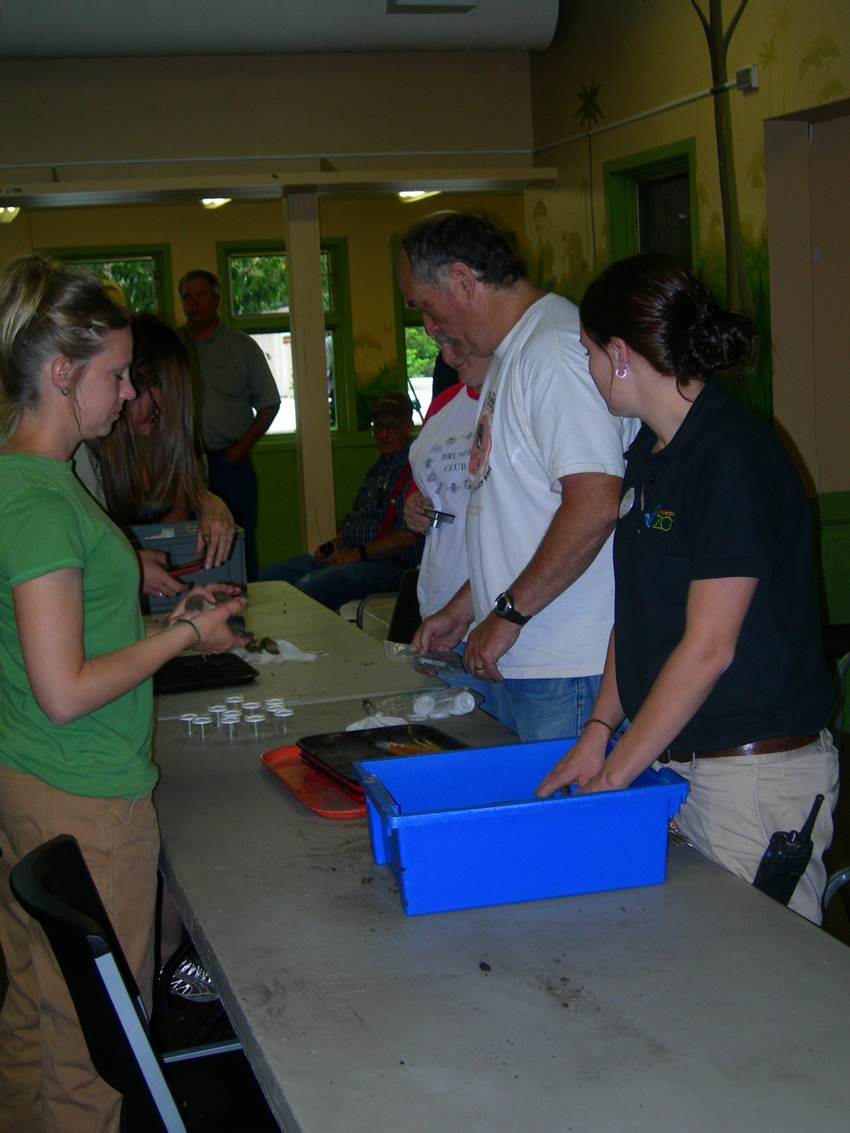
Larvae and Tubes

Ang Wright of the U.S. Fish and Wildlife Service, Steve Spomer of the University of Nebraska, and Stephy Hanigan of the Lincoln Children’s Zoo discuss removal of larvae from the rearing tubes. Larvae were housed in climate and light-controlled rearing chambers since July 2011.